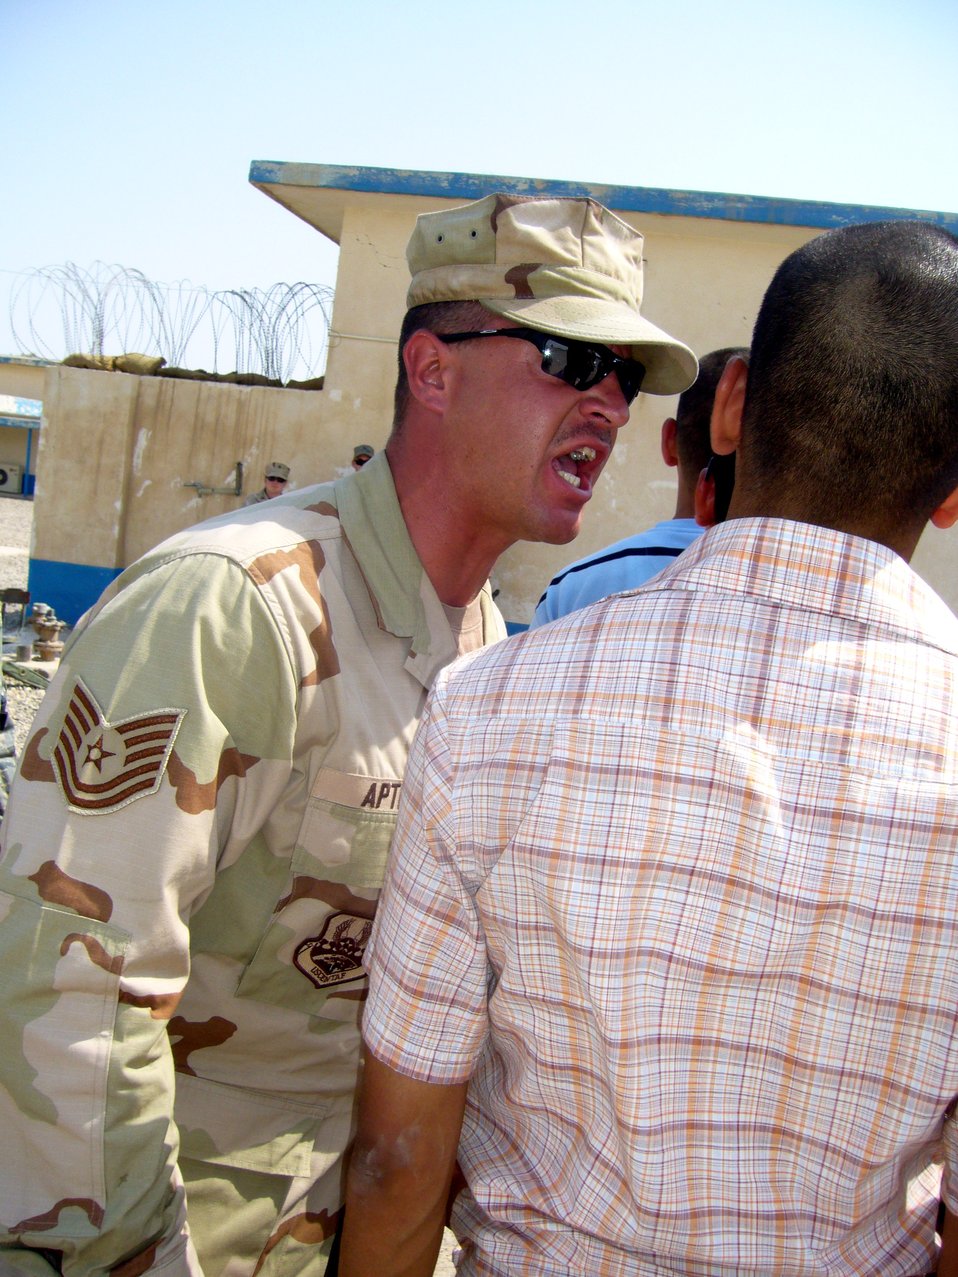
Iraqi air force makes strides toward transition

Tech. Sgt. Justin Apticar welcomes members of the second class of Iraqi Officer Training Cadets to the Air Force Training Academy Aug. 28 at Camp Taji, Iraq. Sergeant Apticar is a member of the Coalition Air Force Transition Team, and is deployed from the 737th Training Group at Lackland Air Force Base, Texas.